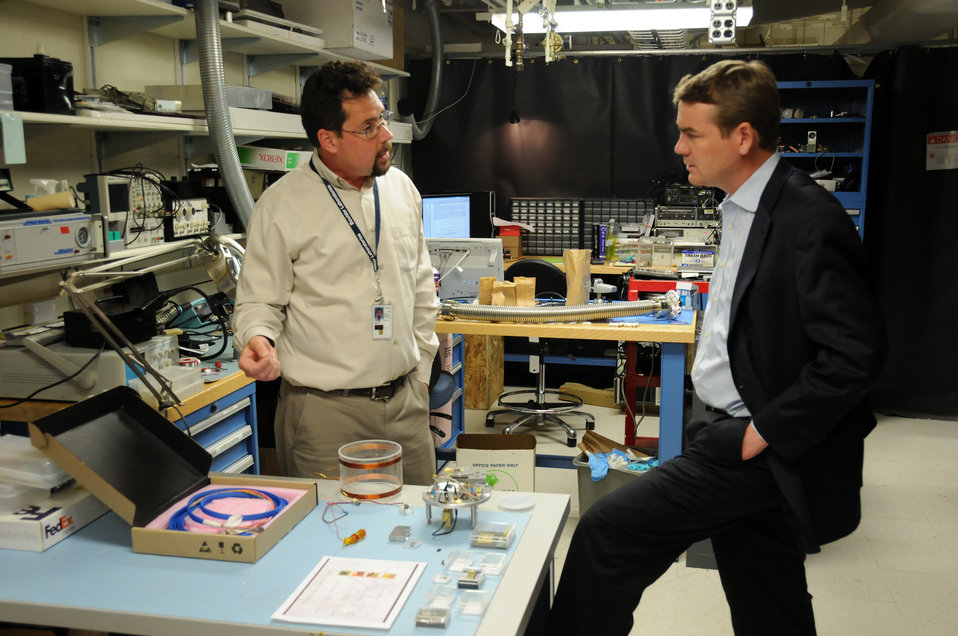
U.S. Senator Bennet and John Kitching

Senator Michael Bennet (D-Co., right) speaks with Dr. John Kitching, a physicist in the Time and Frequency Division of the National Institute of Standards and Technology, during a tour of the Boulder, Colorado labs on May 1. Kitching was answering Senator Bennet’s questions about how he developed a chip-scale atomic clock that is about the size of your thumb, runs an a single AA battery and is a million times more stable than a quality quartz wristwatch.